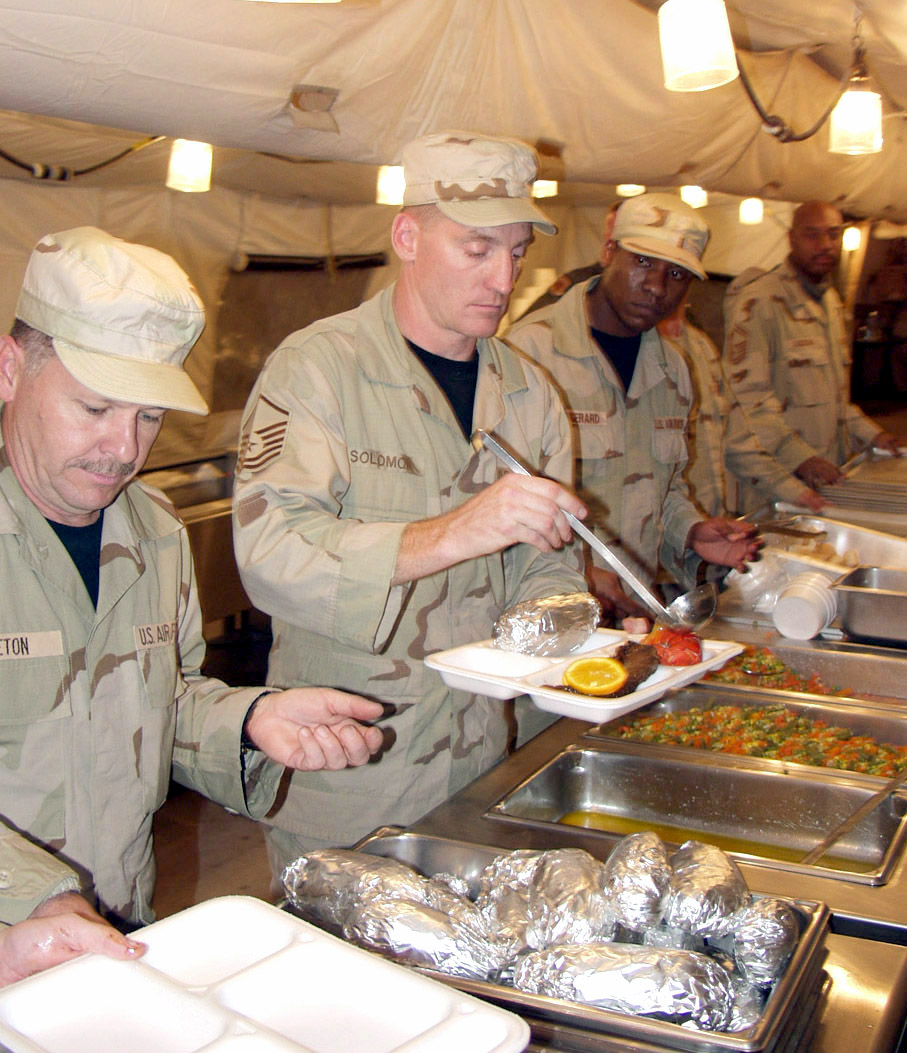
Serving food

KIRKUK AIR BASE, Iraq -- Master Sgt. Jim Solomon serves up a plate of steak and lobster during the December birthday meal here. Sergeant Solomon is assigned to the 506th Expeditionary Services Squadron.